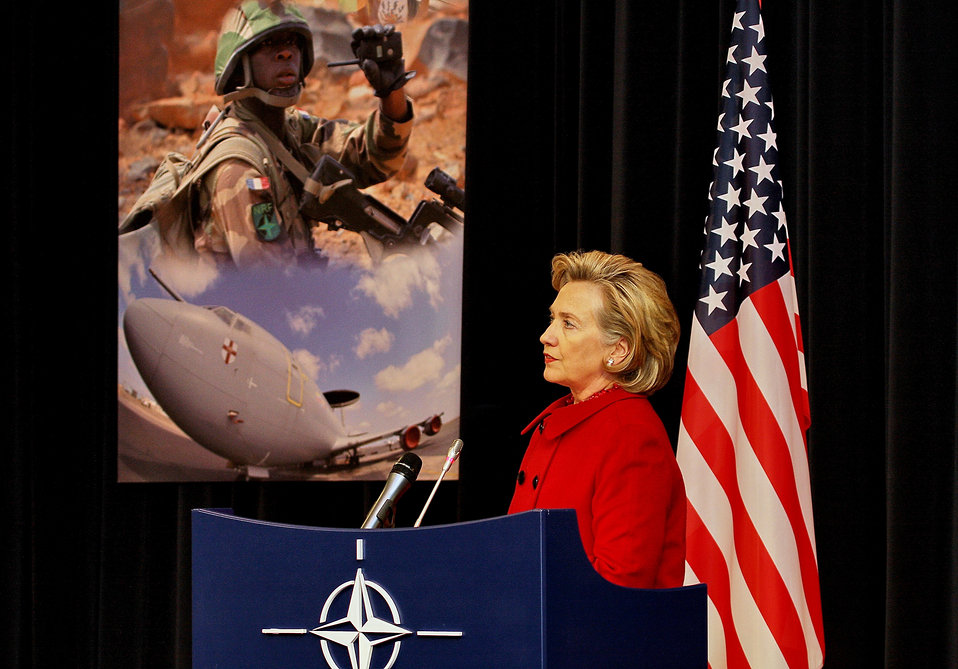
NATO Press Conference

U.S. Secretary of State Hillary Rodham Clinton meets with Belgian officials at Val Duchesse in Brussels, Belgium December 4, 2009.